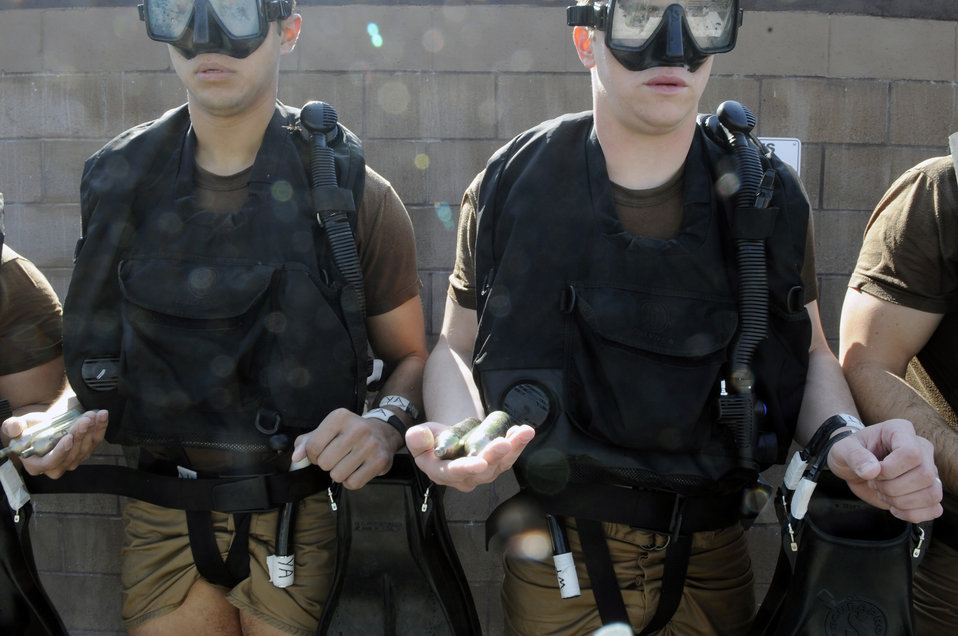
Special Tactics Training

Special Operations Airmen in training wait to be inspected Feb. 10 during their pre-scuba formal training at Hurlburt Field, Fl. Instructors make sure their gear is placed in the proper place for safety precautions. Airmen are assigned to the Special Tactics Training Squadron.